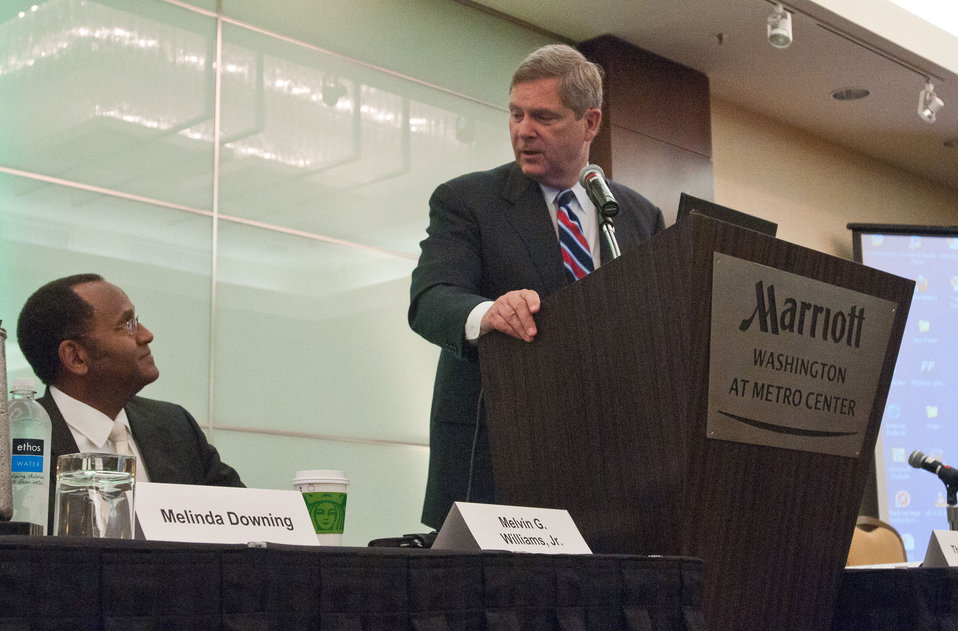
The Departments of Energy, Agriculture, Interior, the Environmental Protection Agency, the National Small Town Alliance, the Howard University School of Law and other partners held the State of Environmental Justice in America 2011 Conference in Washington, D.C., May 27-29, 2011. The year’s theme was 'Building the Clean Energy Economy with Equity.' The focus is on climate change, green jobs and equity for low-income, minority and Tribal populations. Agriculture Secretary Tom Vilsack thanked Melvin G. Williams Jr., Vice Admiral, U.S. Navy (retired), who serves as the Associate Deputy Secretary of Energy at the Minority Alternative and Renewable Energy Consortium Forum on Thursday, Apr. 28, 2011, in Washington, DC, at the end of his speech.